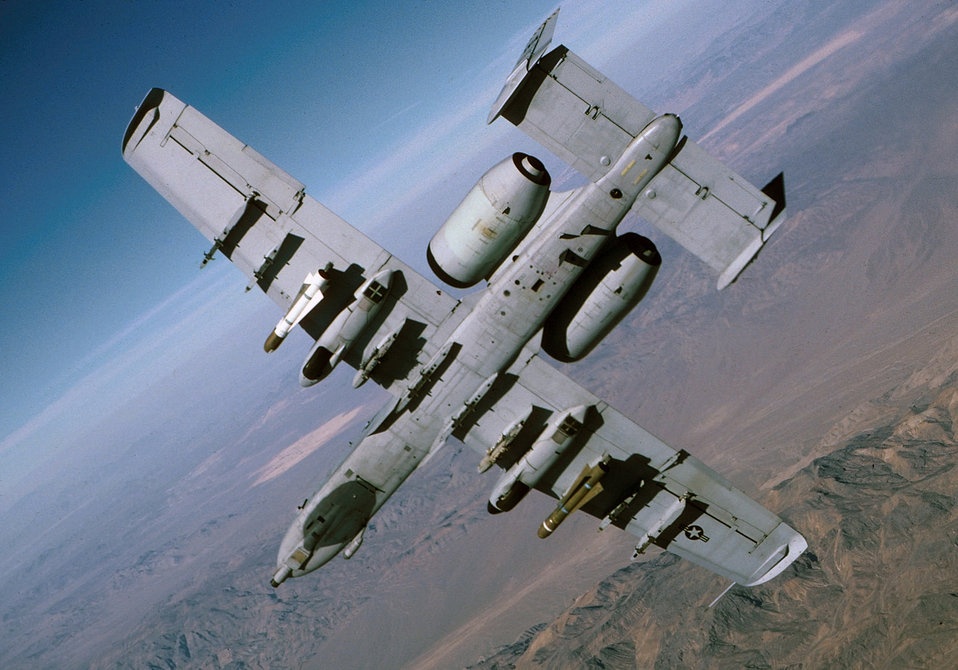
A-10 Thunderbolt II

1990's -- The A-10 Thunderbolt II is the first Air Force aircraft specially designed for close air support of ground forces. They are simple, effective and survivable twin-engine jet aircraft that can be used against all ground targets, including tanks and other armored vehicles.